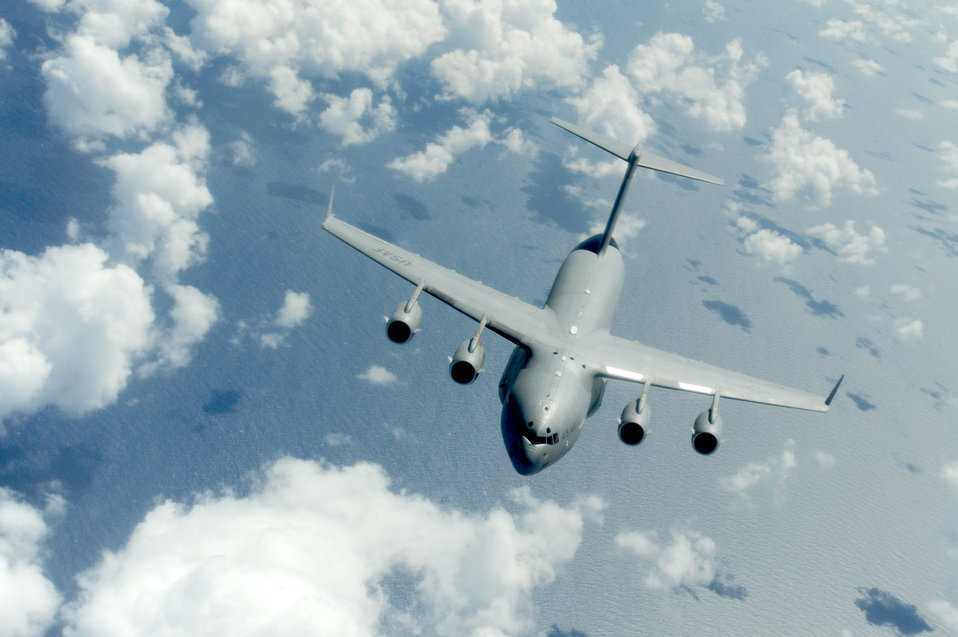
C-17 refuels over the Pacific

A C-17 Globemaster III approaches a KC-135 Stratotanker Sept. 18, 2010, over the Pacific Ocean during a Total Force partnership mission. The C-17 is assigned to the 15th Wing at Joint Base Pearl Harbor-Hickam, Hawaii and the KC-135 is from a Hawaii Air National Guard's 204th Air Refueling Squadron.